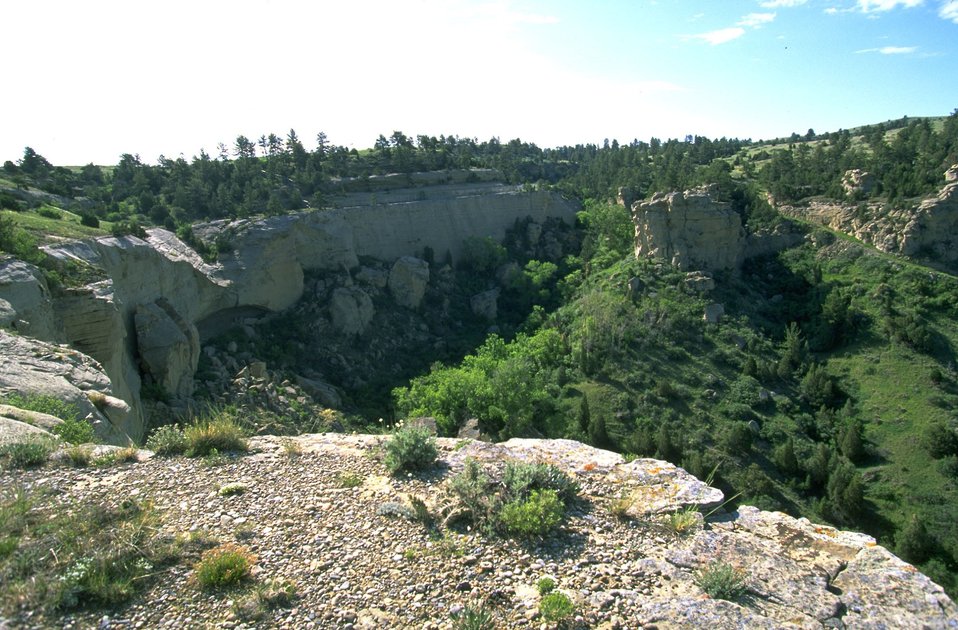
Sandstone cliffs east of Billings in the Four Dances Natural Area